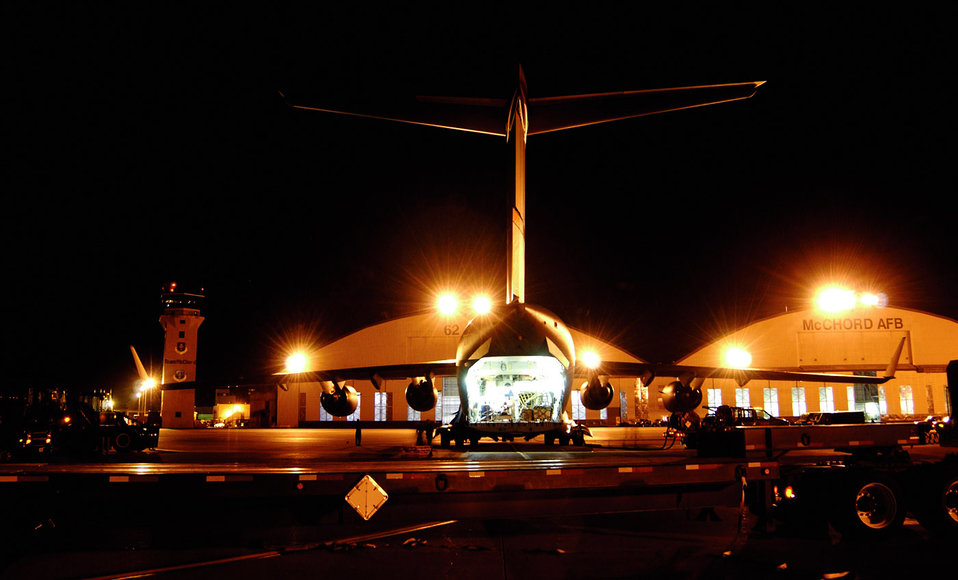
AMC 'total force' rushes to aid of Russian sailors

MCCHORD AIR FORCE BASE, Wash. -- A C-17 Globemaster III sits on the runway here waiting for a crew from the 4th Airlift Squadron. The C-17 carried a deep sea drone and U.S. Navy crew to Russia to aid in the rescue of seven sailors trapped aboard a submarine.